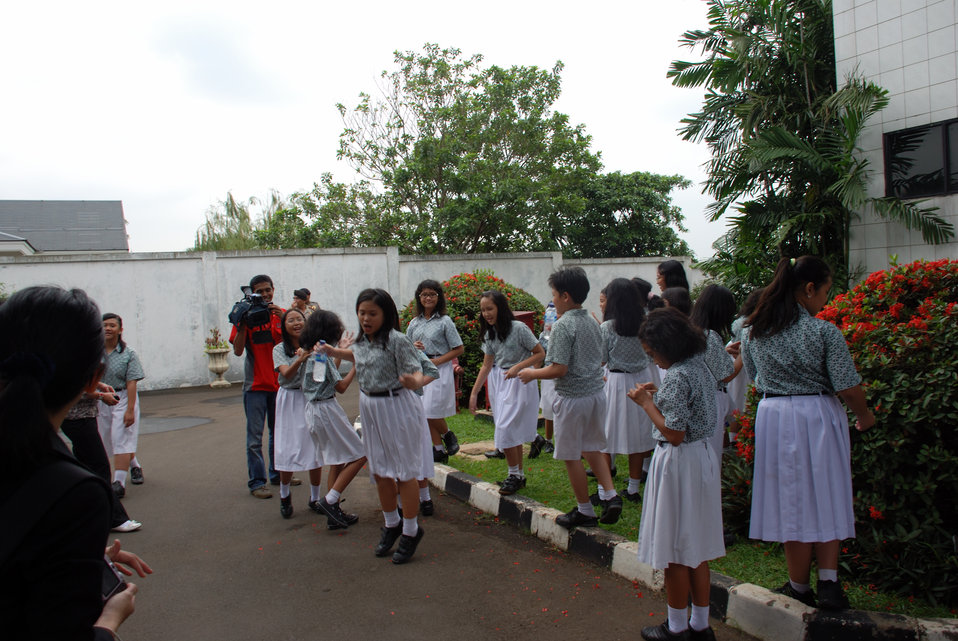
Behind the Scenes: Indonesian Students Prepare for Secretary Clinton's Arrival

Menteng Elementary School No. 1 students relax before U.S. Secretary of State Hillary Rodham Clinton arrives in Jarkarta, Indonesia during her visit February 18, 2009.